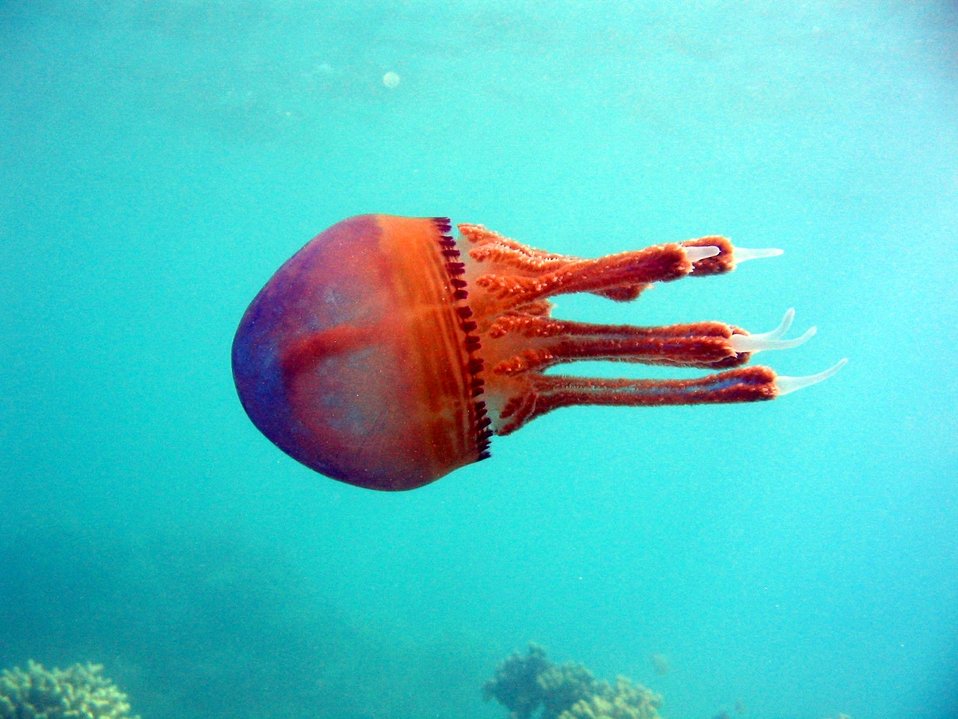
A red jellyfish.